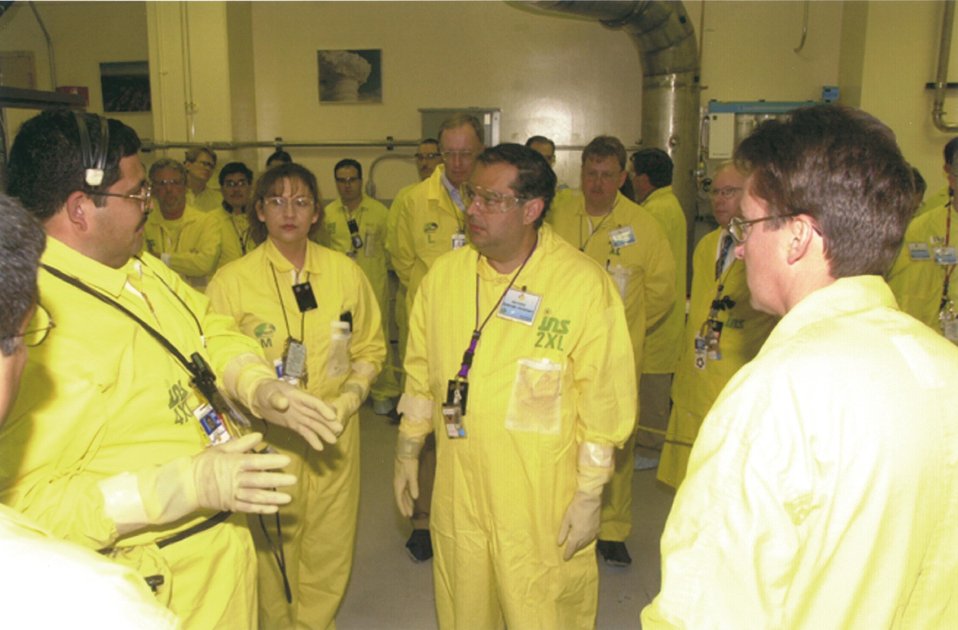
SECRETARY OF ENERGY SPENCER ABRAHAM GETS TOUR OF TECHNICAL AREA-55, PLUTONIUM FACILITY 4.